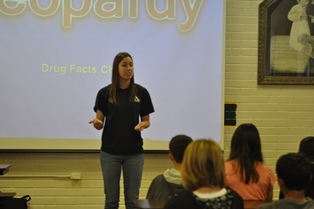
Just the Facts in AZ

In honor of the 2014 National Drug Facts Week, Casa Grande Alliance went to St. Anthony of Padua School in Casa Grande, AZ and played Drug Facts Chat Jeopardy! The students learned that M.O.S.T. (Our Social Norm Campaign that stands for Making Our Students Think) Casa Grande youth don't use drugs or drink alcohol! The students were also able to get their drug and alcohol questions answered and boy did they have some good ones to ask!